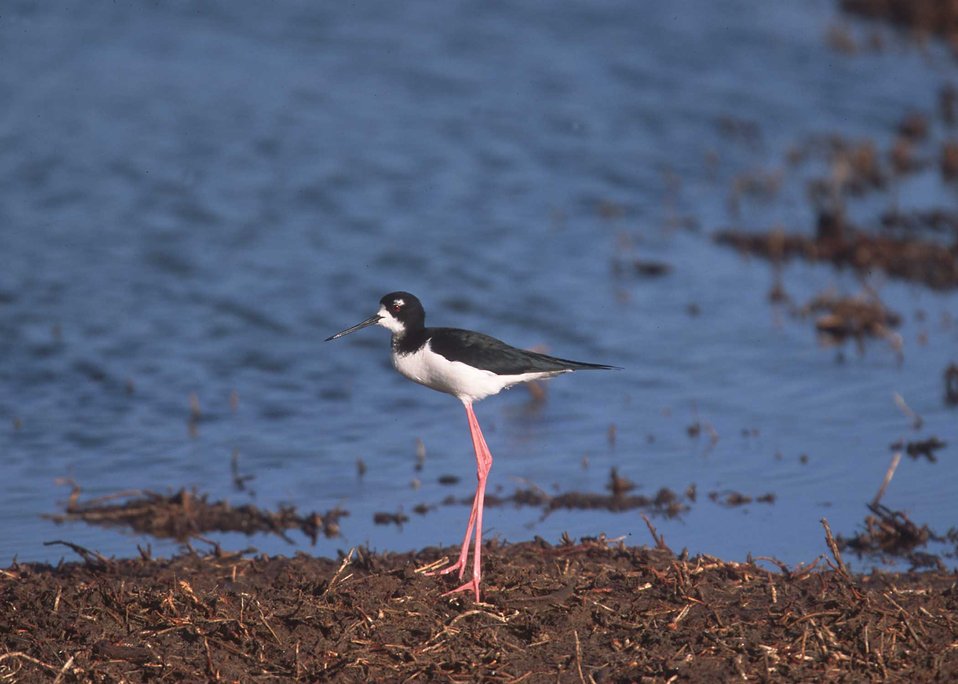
Black neck stilt in Hawaii.